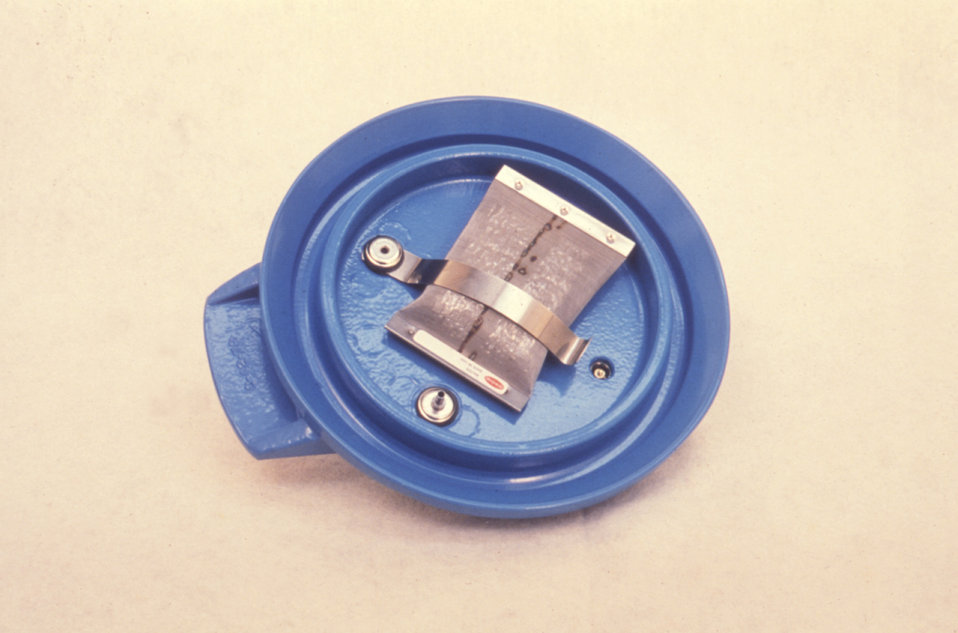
This photograph shows the inside of the lid of an Oxoid jar with the catalase screen attached.